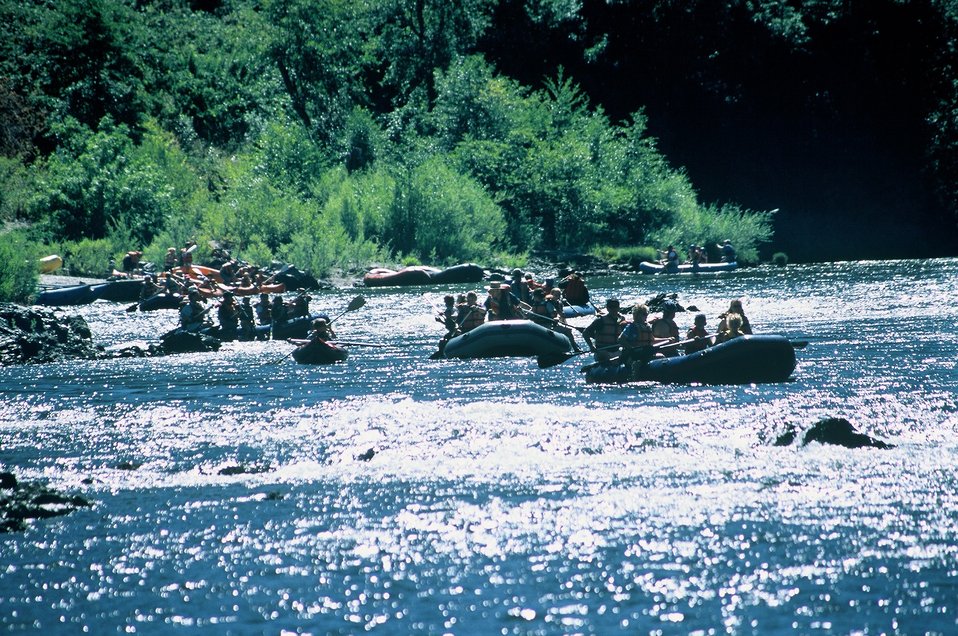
Hog Creek